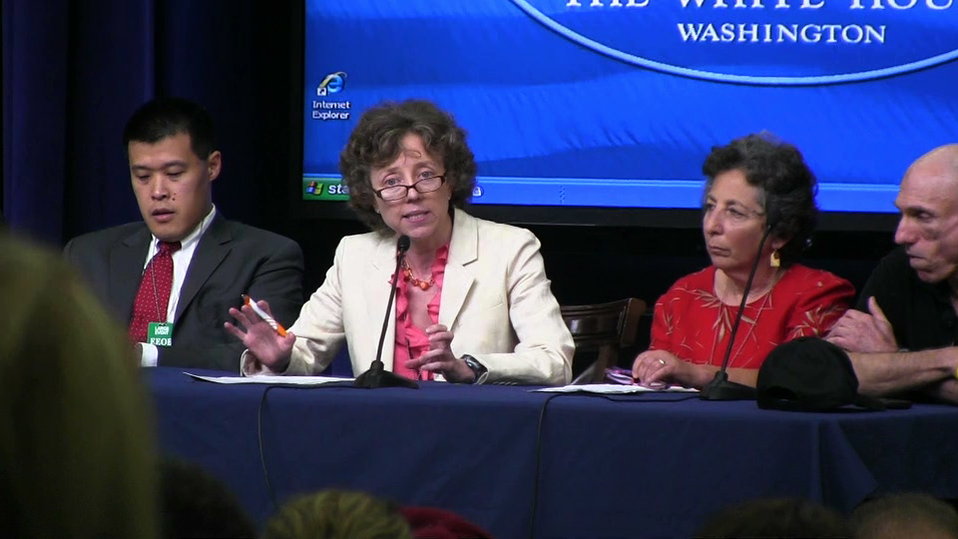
WHDpanel5